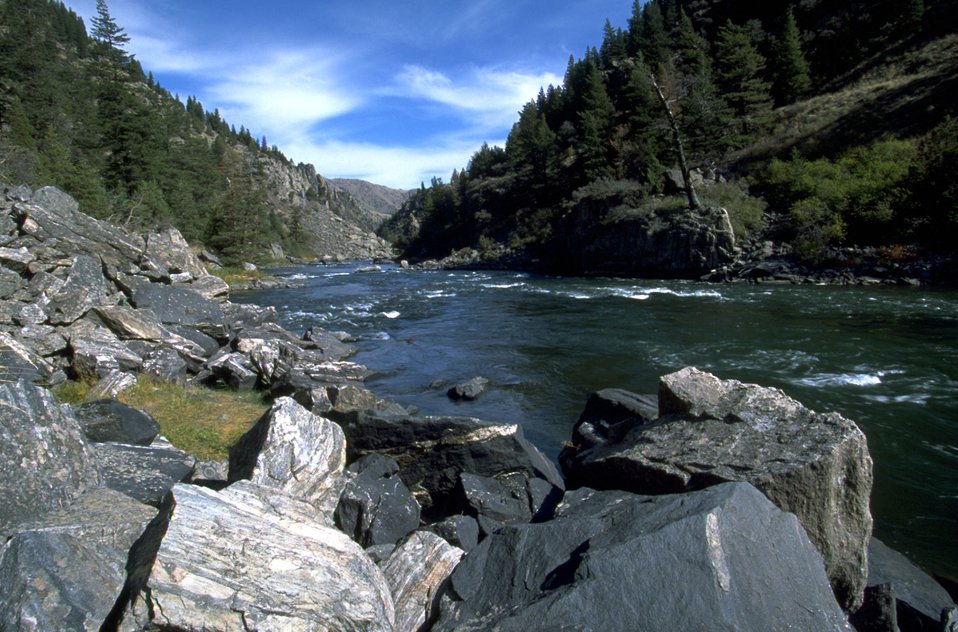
Looking downstream of the Madison River